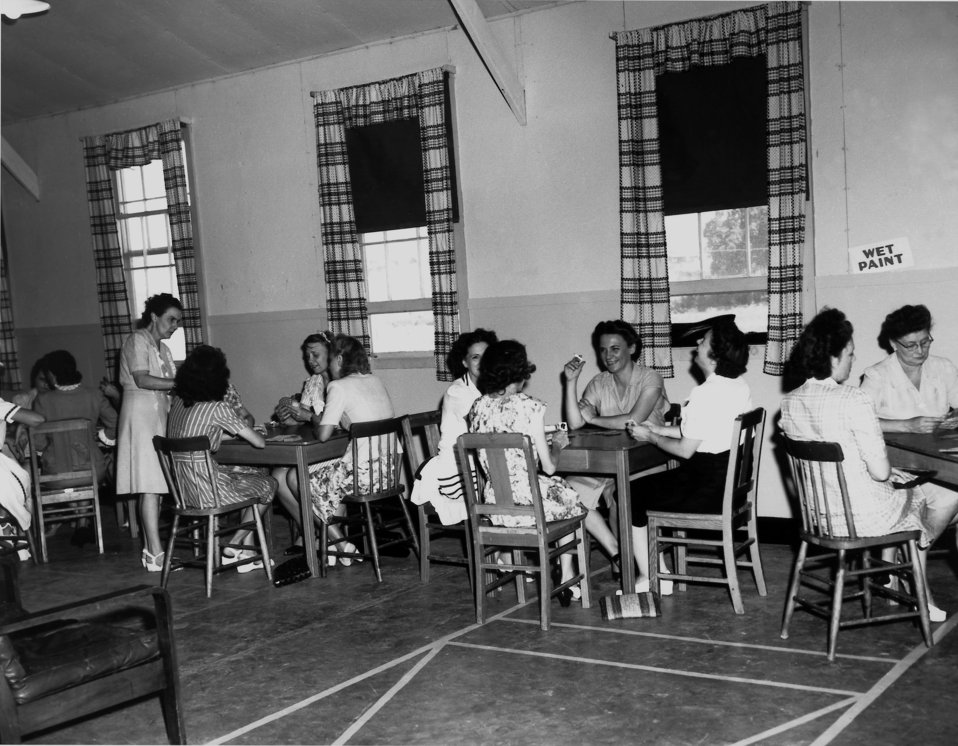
Midtown Comm. Hall bridge club Oak Ridge

pro 841-1 DOE Photo Ed Westcott 7/20/45
Oak Ridge Tennessee